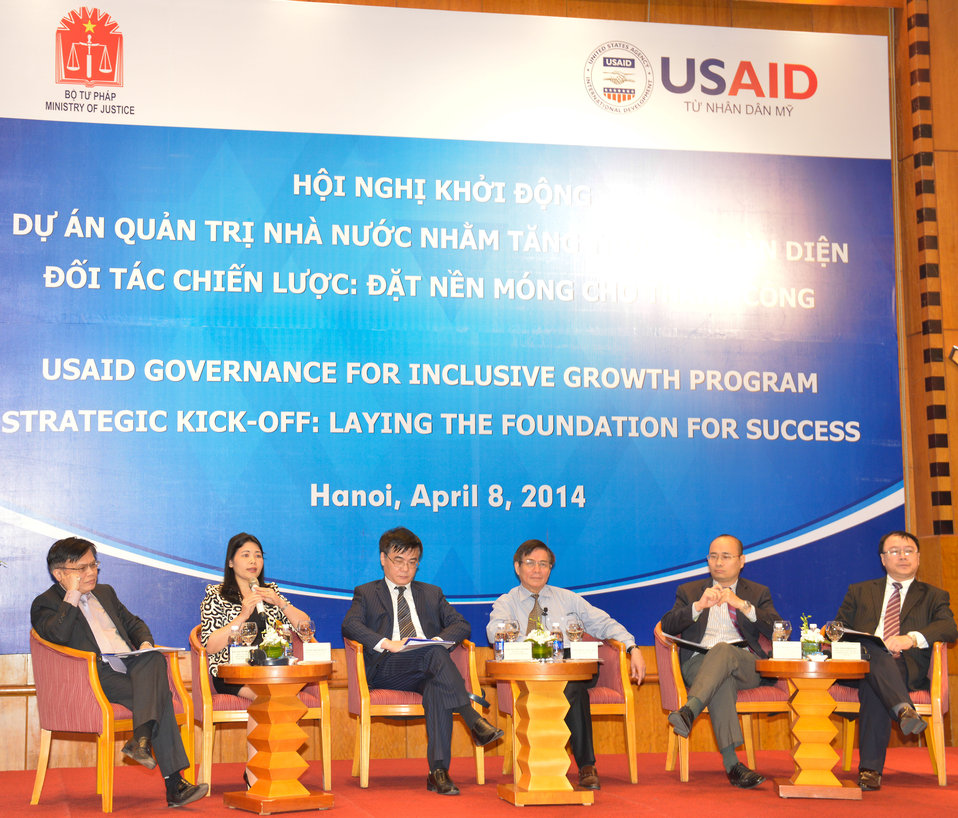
Strategic Kick-off of Governance for Inclusive Growth Program

Hanoi, April 8, 2014.